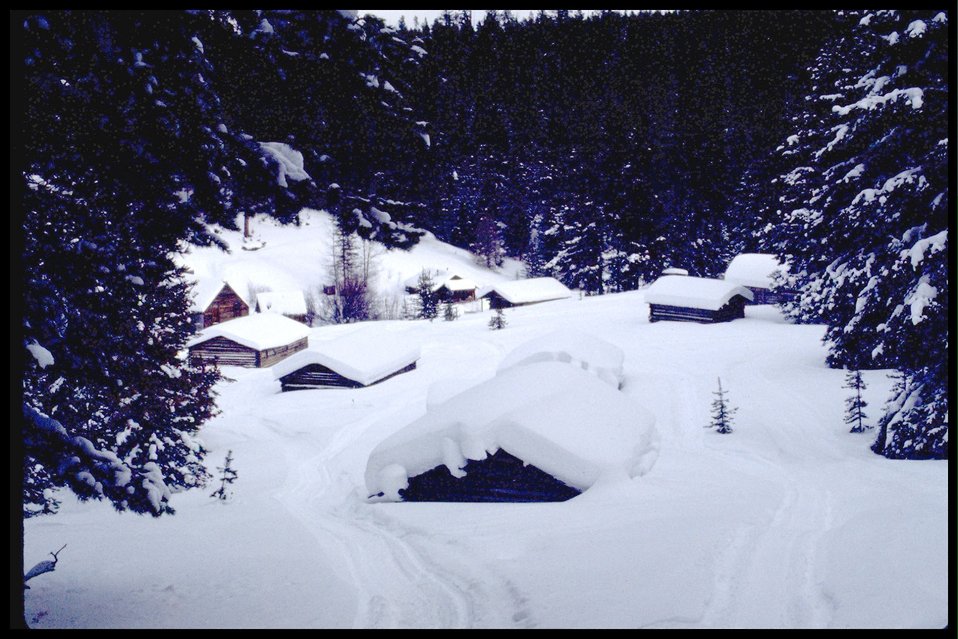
Garnet Ghost town in winter